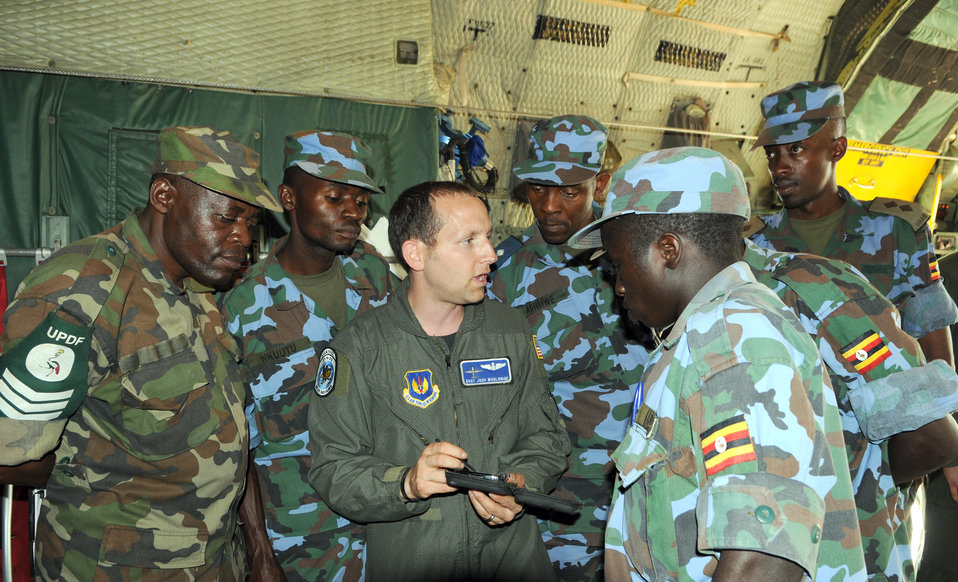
Air Forces Africa Airmen share airdrop expertise with Ugandan forces

Staff Sgt. Josh Woolrich gives a tour of an Air Force C-130 Hercules to members of the Uganda peoples defense force during a theater security cooperation event Aug. 26, 2009, at Entebbe Air Base, Uganda.